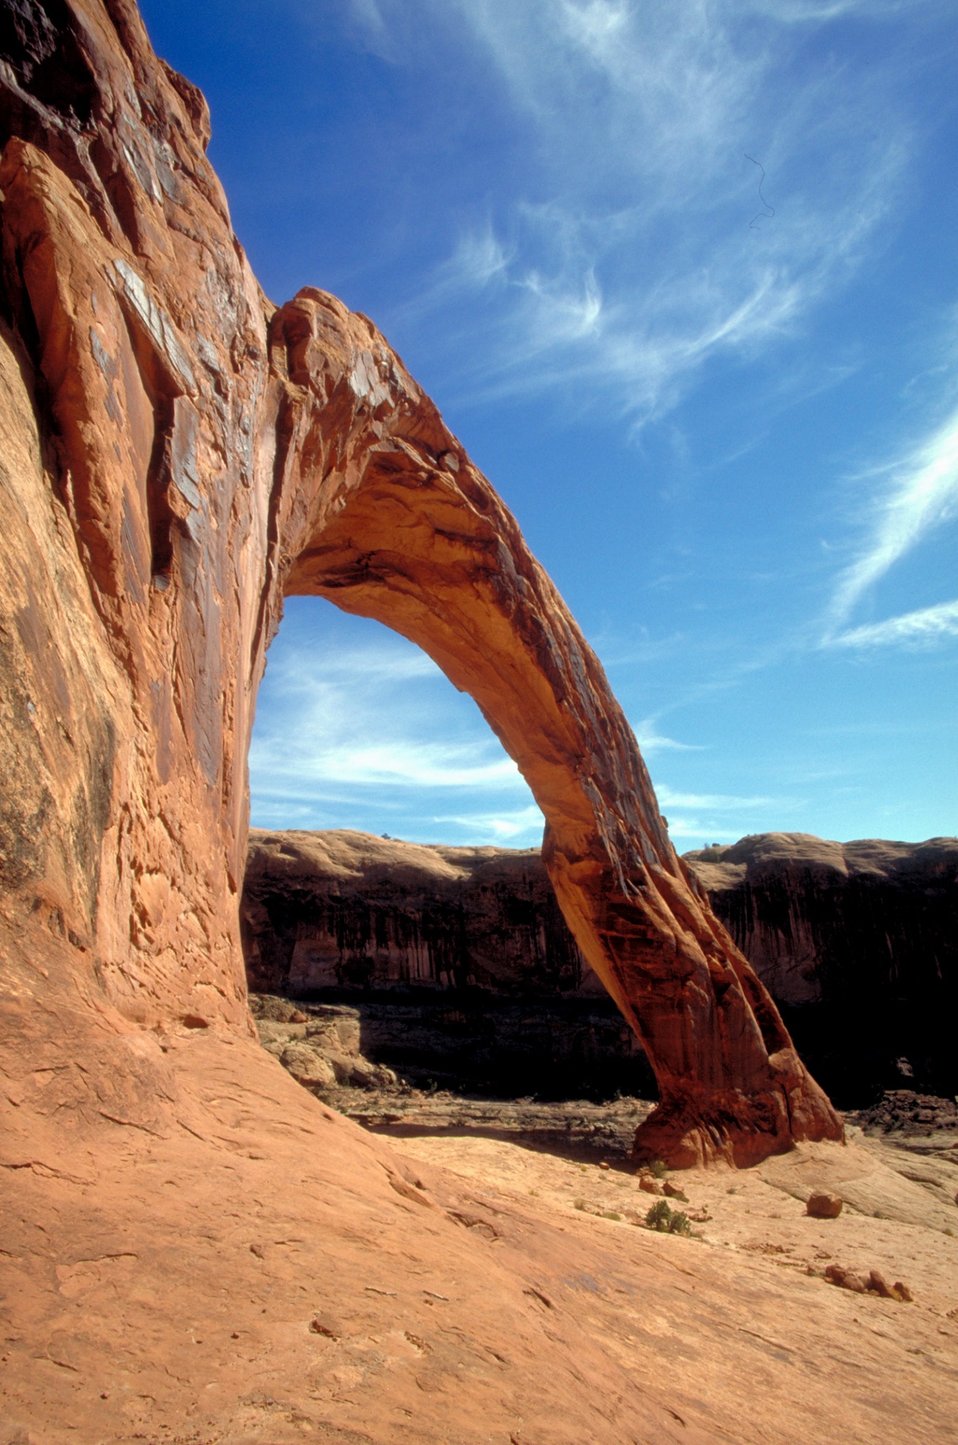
Corona Arch near Moab, Utah.